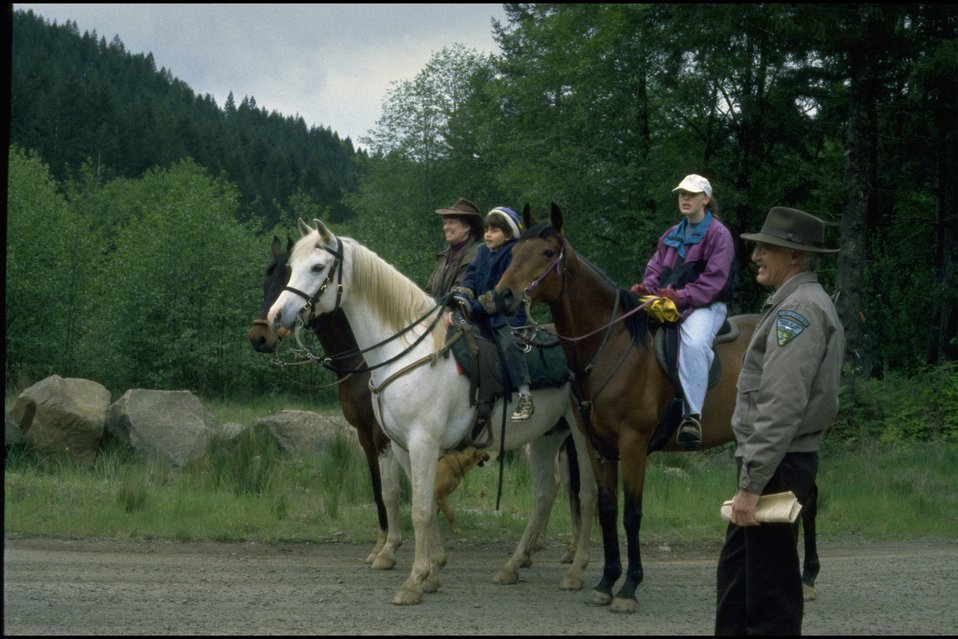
Horse Poker Ride.